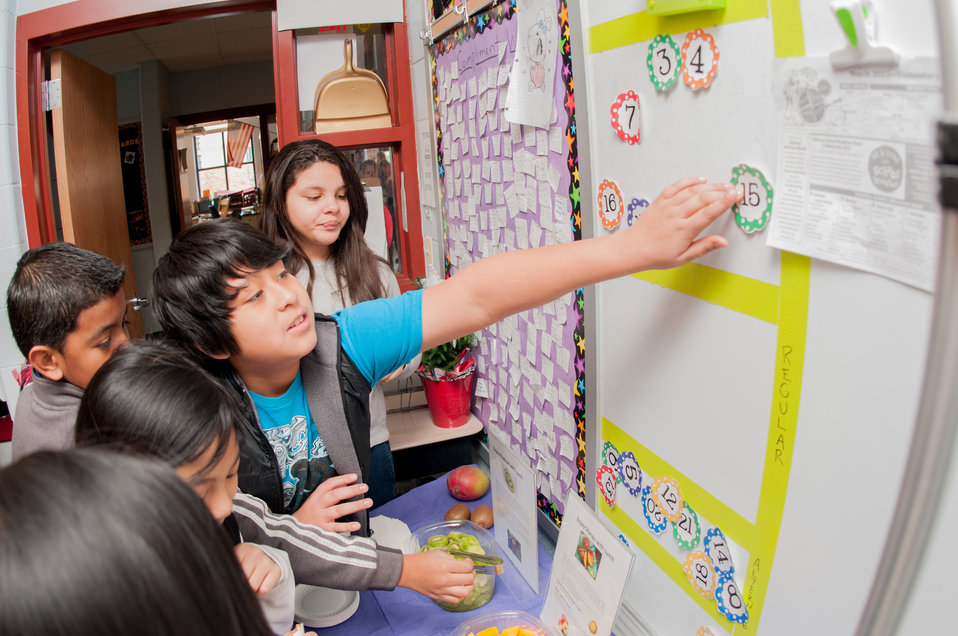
Students make lunch menu choices at the beginning of each school day. Today is the inaugural International School Meals Day (ISMD) at Harmony Hills Elementary School in Silver Spring, MD, on Friday, March 8, 2013. Harmony Hills Elementary School, participates in the Maryland Meals for Achievement (MMFA), In-Classroom breakfast program, the fresh fruit and vegetable program, and the summer food service program. Department of Agriculture (USDA) Food, Nutrition and Consumer Services participated in (ISMD) Mr. Damien Grasso's 5th grade class was paired with Mrs. Karen McAllister’s class at Dalry Primary School in North Ayrshire, Scotland, United Kingdom. Using a real-time online video website service, the children shared some of the healthy eating and physical activity choices available to them. The Dalry fitness program includes Zumba classes, and Harmony Hills includes a Fitness Club. Both schools have soccer programs. The Harmony Hills 5th grade students shared their thoughts about their healthy menu items, mango, kiwi, and hummus. The Dalry students honored the Maryland students, by having prepared a Southern Maryland dessert, Smith Island cake (made with 7 thin cake layers). The ISMD has 14 classrooms (grades 3-8) in the U.S. connected with 14 classrooms in Scotland. USDA plans to expand the initiative to include partnerships with additional countries in future years. USDA's Food and Nutrition Service oversees the administration of 15 nutrition assistance programs that work in concert to form a national safety net against hunger. Learn more by visiting www.fns.usda.gov and twitter @USDANutrition.